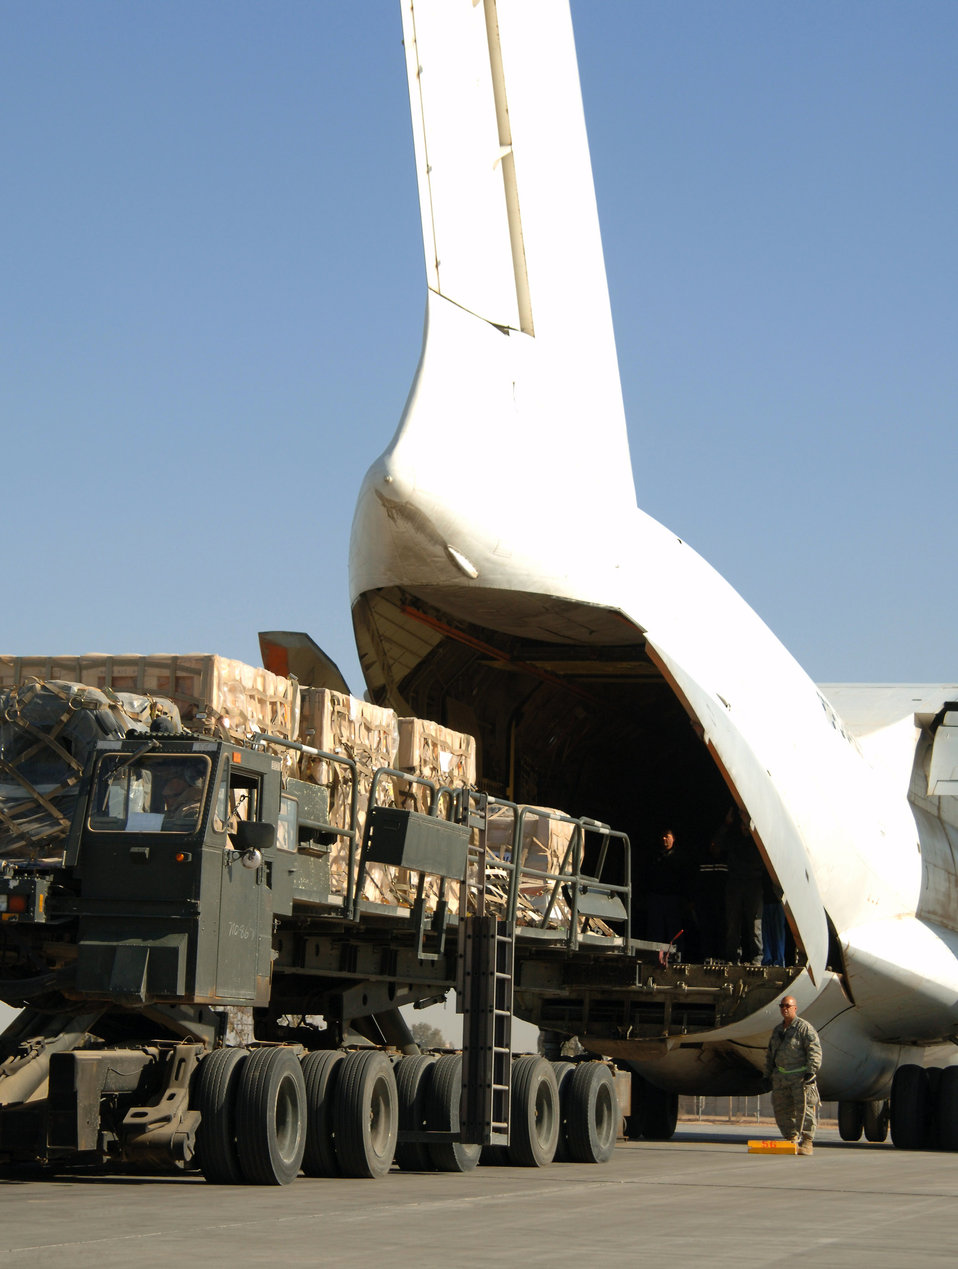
Aerial porters keep convoys off the road

Tech. Sgt. Peter Aguilar observes a 60K Tunner loader as it pulls away after receiving cargo from a Russian AN-124 aircraft at Balad Air Base, Iraq. Sergeant, an aerial port flight ramp service technician with the 332nd Expeditionary Logistics Readiness Squadron, is a reservist deployed from the 88th Aerial Port Squadron at McGuire Air Force Base, N.J.